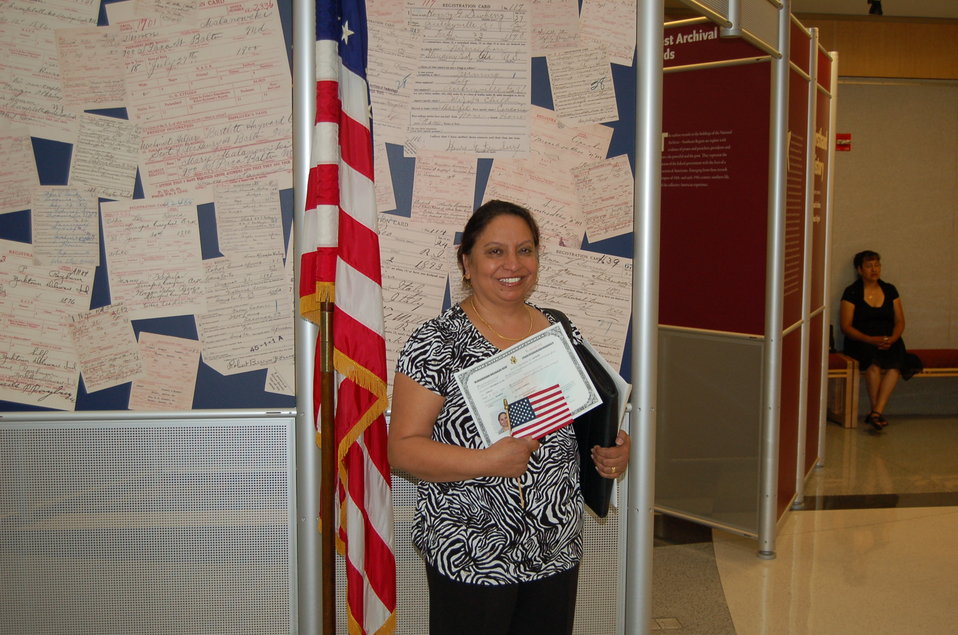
New Citizens